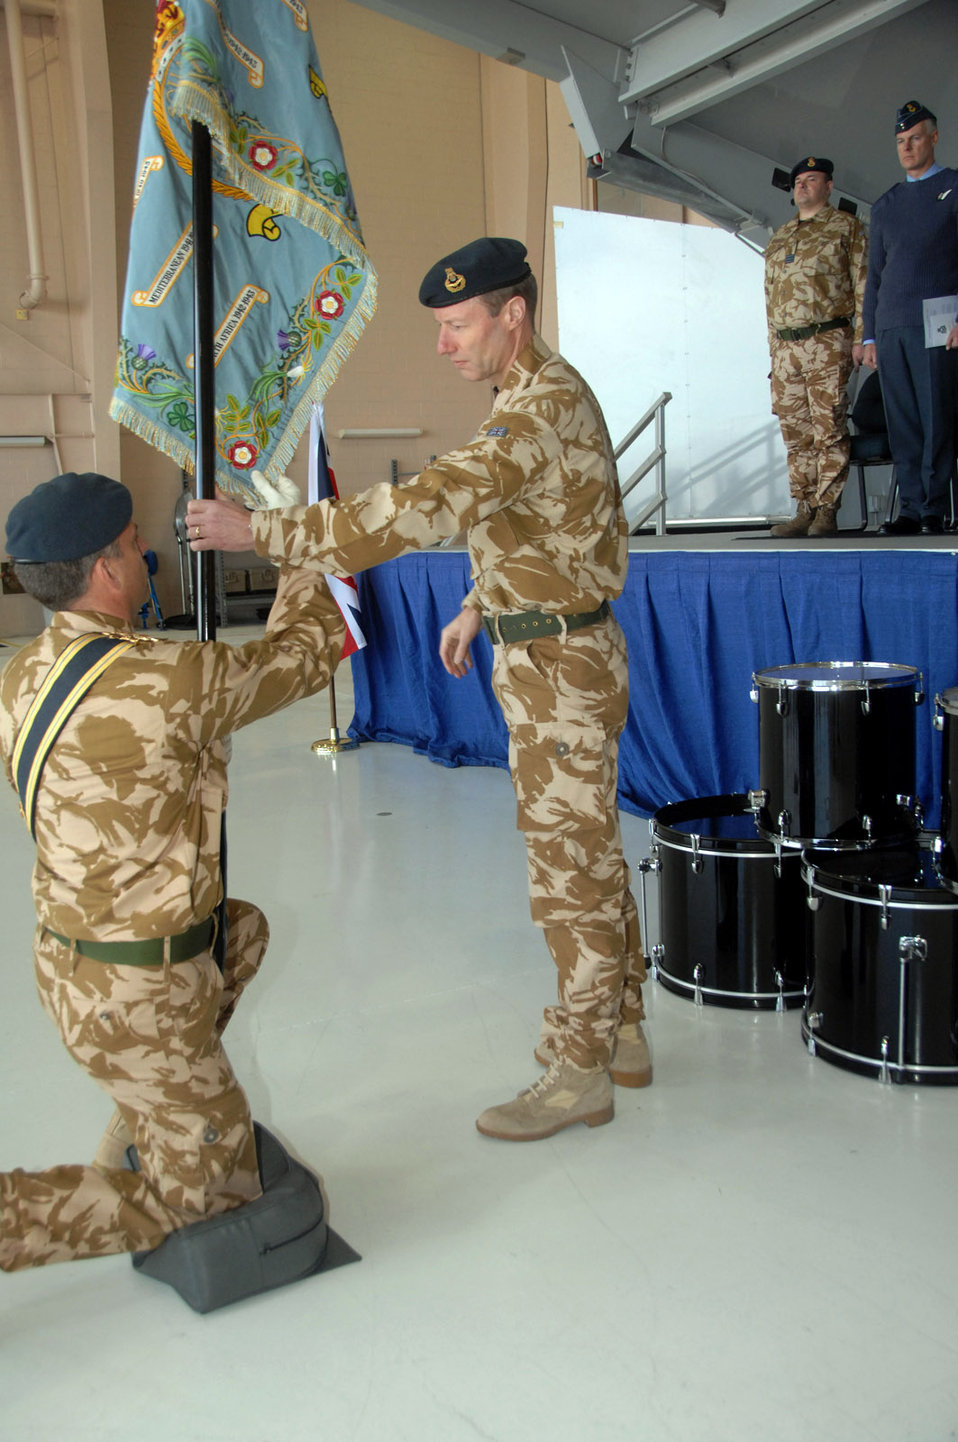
RAF activates unmanned aerial vehicle squadron at Creech

Royal Air Force Wing Commander Andy Jeffery hands off the flag during an activation ceremony of the 39th United Kingdom Reaper Squadron to Flight Lt. Bert Weedon Jan. 23 at Creech Air Force Base, Nev. RAF officials activated an unmanned aerial vehicle squadron during the ceremony.